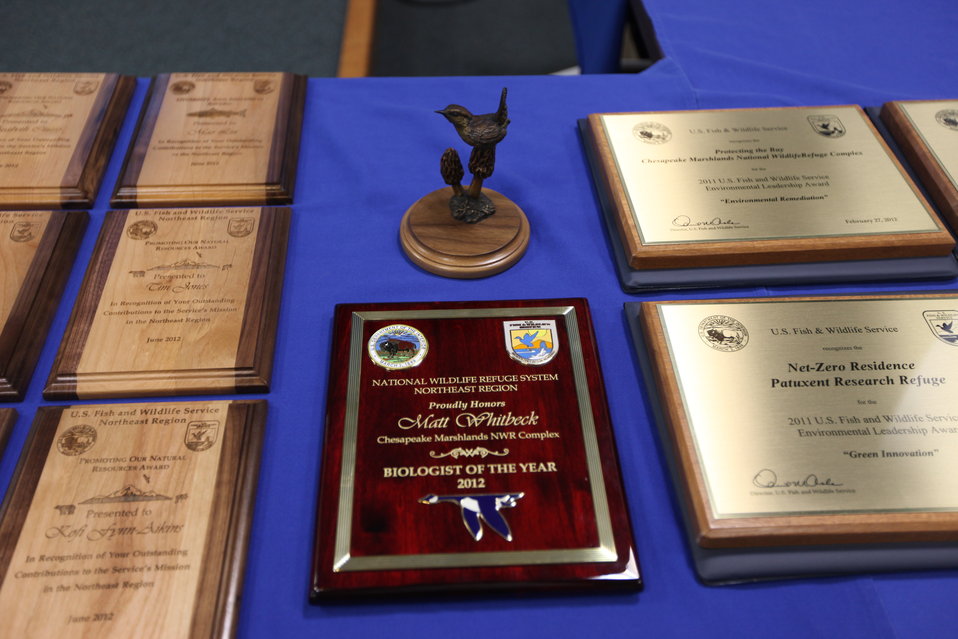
Northeast Region Employee Appreciation Awards

Biologist of the Year - 2012 - Matt Whitbeck!